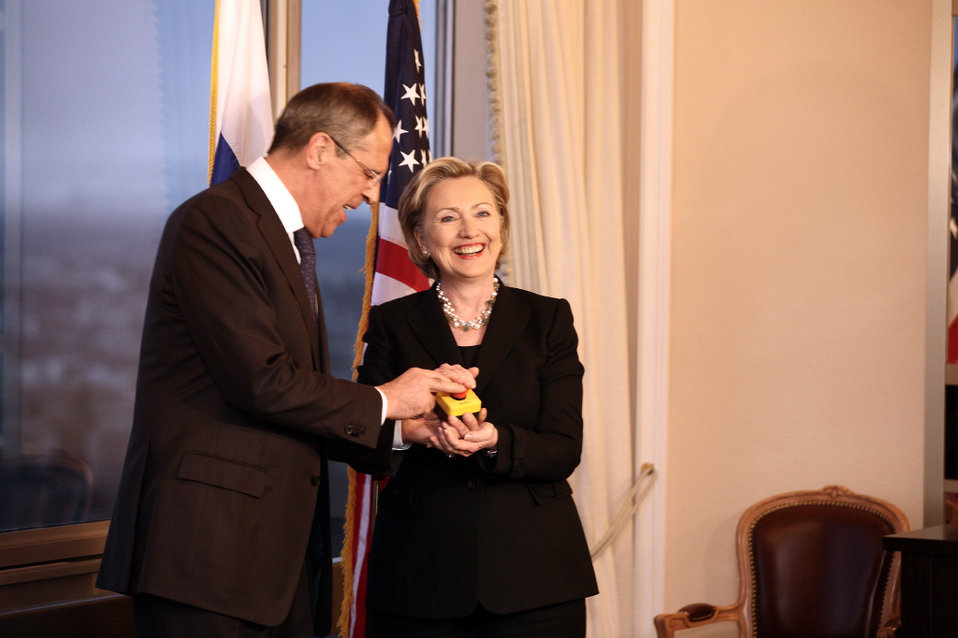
'Restart Button' offered by U.S. Secretary of State Hillary Rodham Clinton to Russian Foreign Minister Sergey Lavrov in Geneva, Switzerland March 6, 2009.